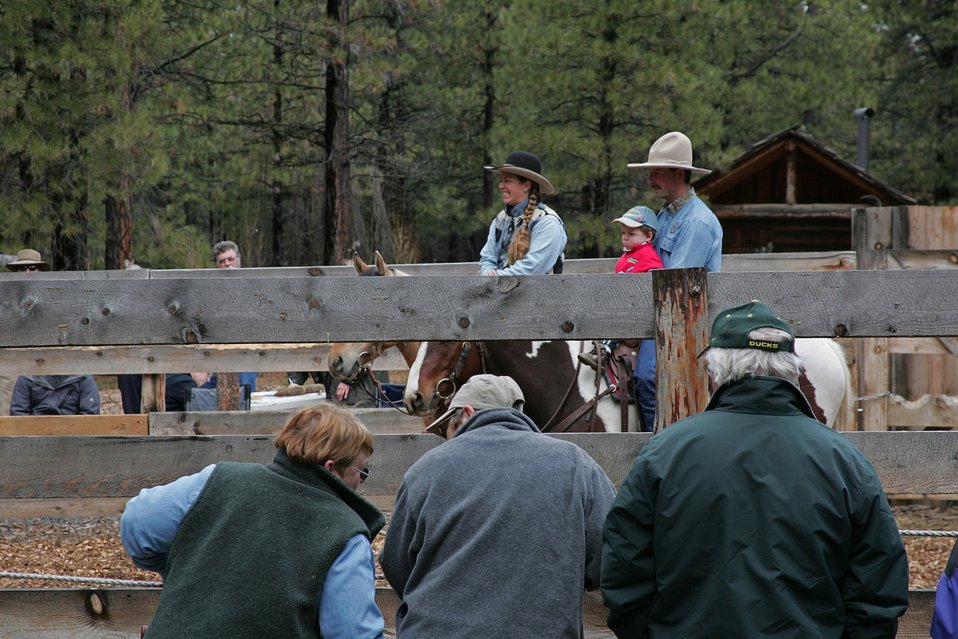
Horse trainers Kitty and Rich Lauman talk with High Desert Museum visitors about the working with the wild mustangs Sage and Spirit.